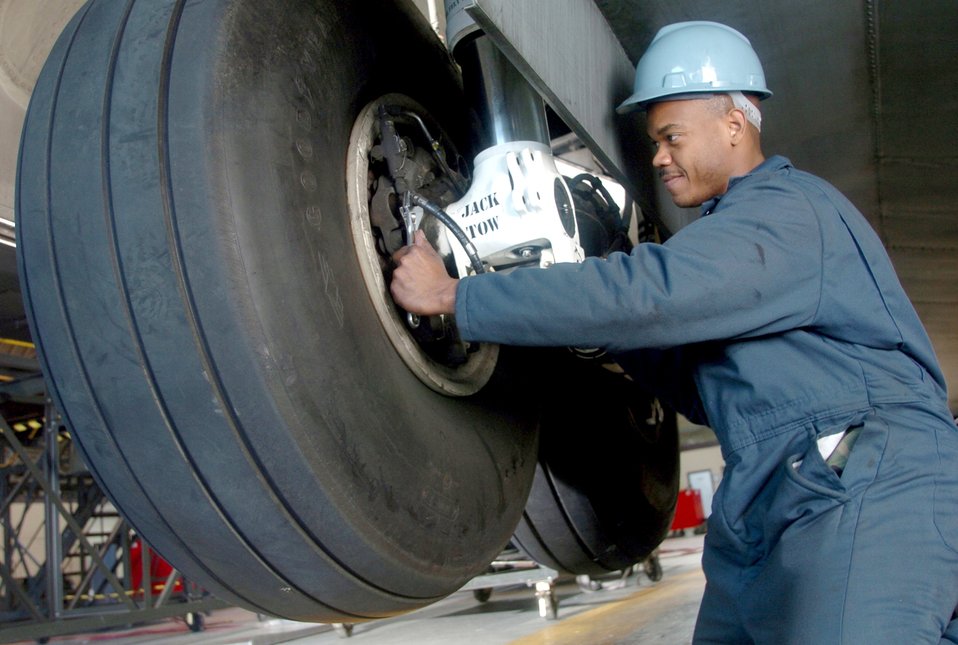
Yokota isochronal Airmen keep Pacific fleet healthy

YOKOTA AIR BASE, Japan -- Staff Sgt. William Henderson inspects a C-130 Hercules landing gear during an isochronal inspection. Pacific Air Force C-130s undergo a major inspection here once a year to ensure that the fleet is in top condition. Sergeant Henderson is a repair and reclamation technician from the 374th Maintenance Squadron.